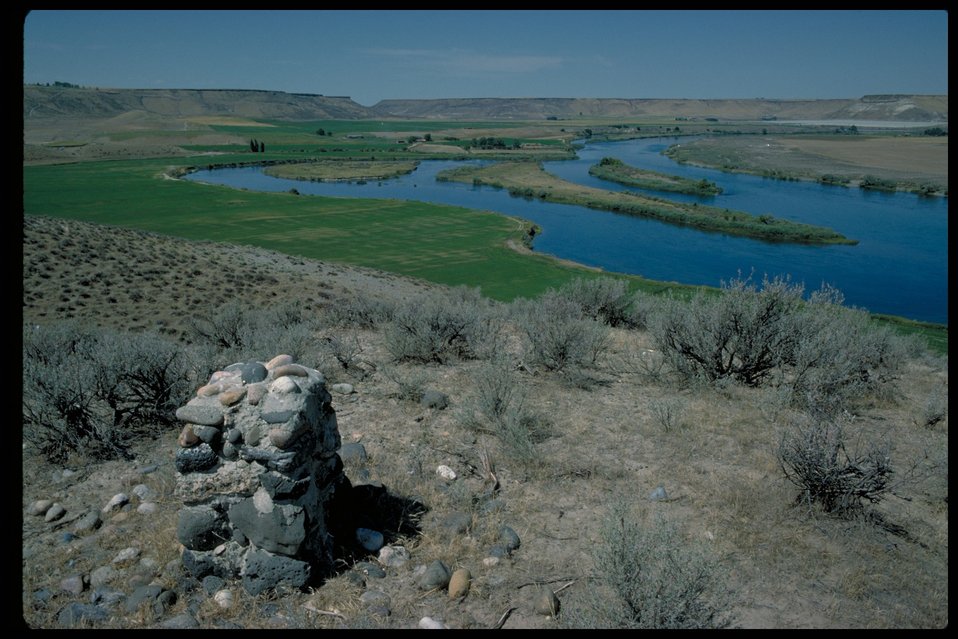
Oregon Trail Monument at Three Island Crossing Lower Snake River District